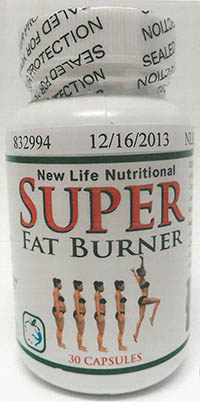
RECALLED – Dietary Supplement

March 25, 2014 – Product Recall – New Life Nutritional Center Issues Voluntary Nationwide Recall of Super Fat Burner, Maxi Gold and Esmeralda Dietary Supplements Due to the Presence of Undeclared Sibutramine and Phenolphthalein.